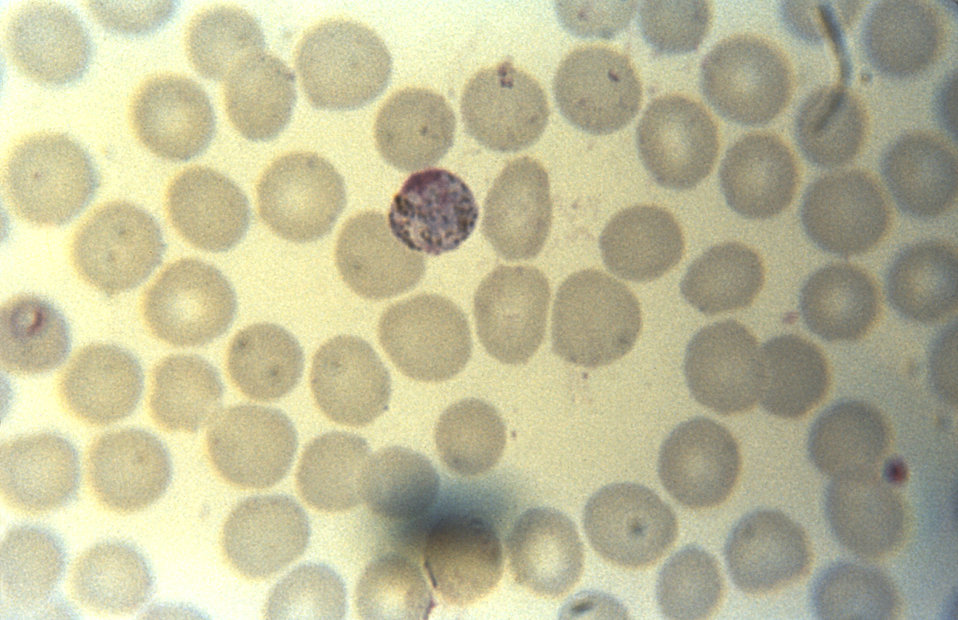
This thin film Giemsa stained micrograph revealed a mature Plasmodium malariae trophozoite.